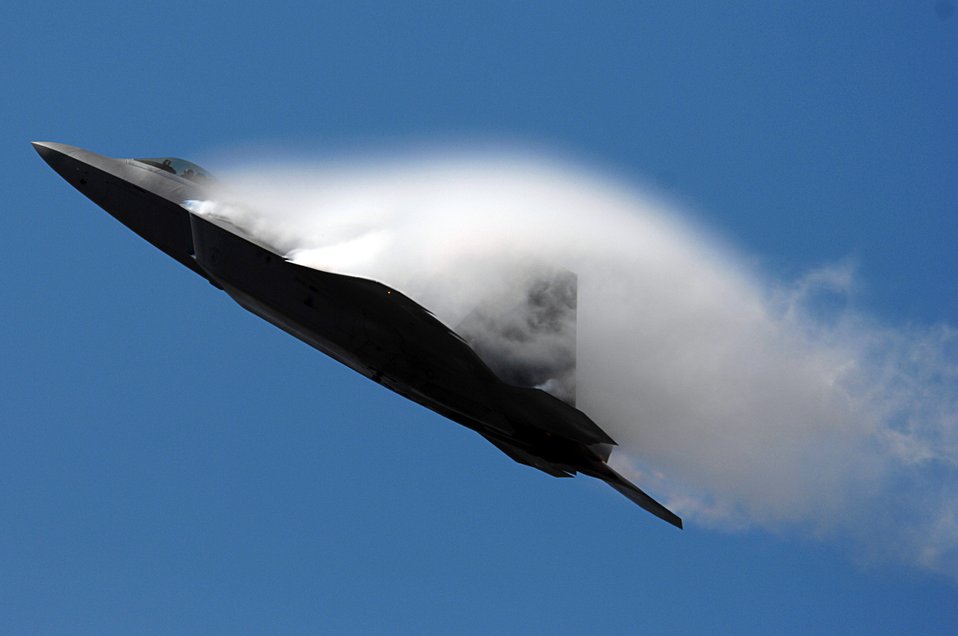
Raptor, Thunderbirds fly over California

An F-22 Raptor from Langley Air Force Base, Va., performs for thousands during an April 1 air show at Naval Base Ventura County in Point Mugu, Calif. The F-22 is the Air Force's newest fighter aircraft. Its combination of stealth, supercruise, maneuverability, and integrated avionics, coupled with improved supportability, represents an exponential leap in warfighting capabilities.